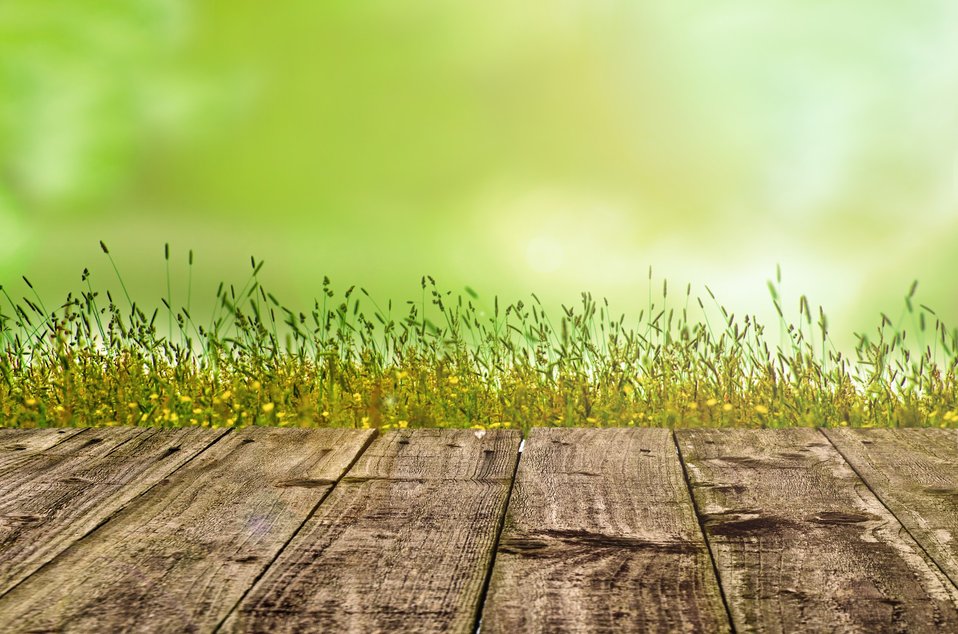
Wooden floor with green background.